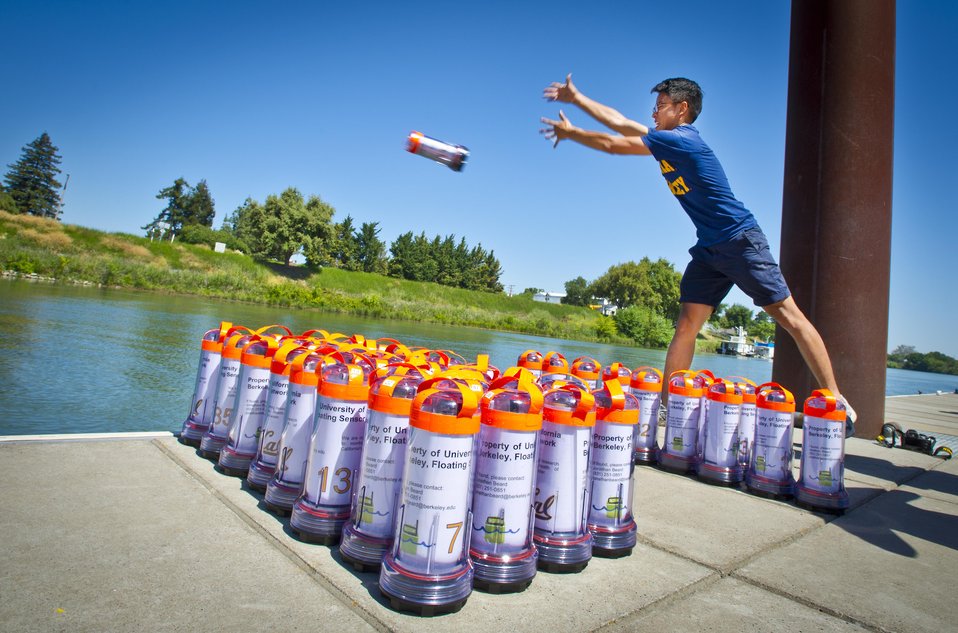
The Center for Information Technology Research in the Interest of Society (CITRIS), Berkeley Lab and its National Energy Research Scientific Computing Center (NERSC), and UC Berkeley's Department of Civil and Environmental Engineering and Department of Electrical Engineering are collaborating to conduct an unprecedented experiment in the area of hydrodynamic monitoring to advance our understanding of water conditions in the Delta. Understanding how the water flows through the Delta on its way to pumping stations and San Francisco Bay is imperative to balance conflicting demands on this critical resource.